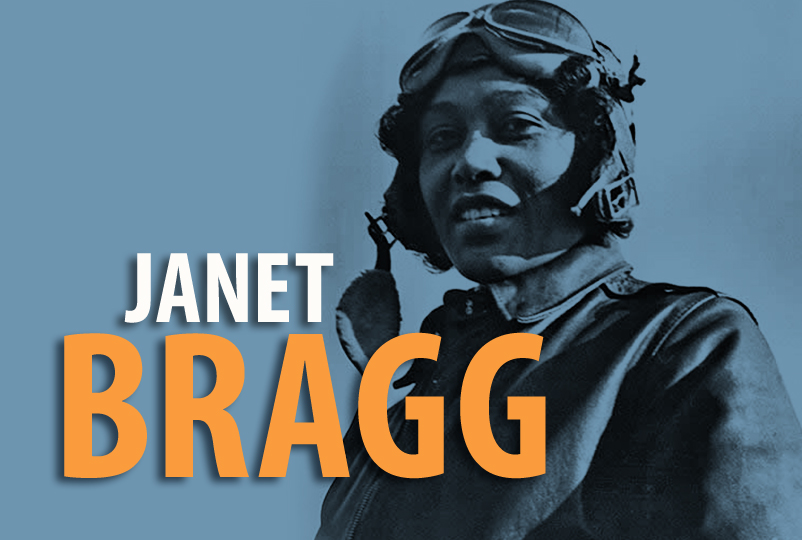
Janet Bragg